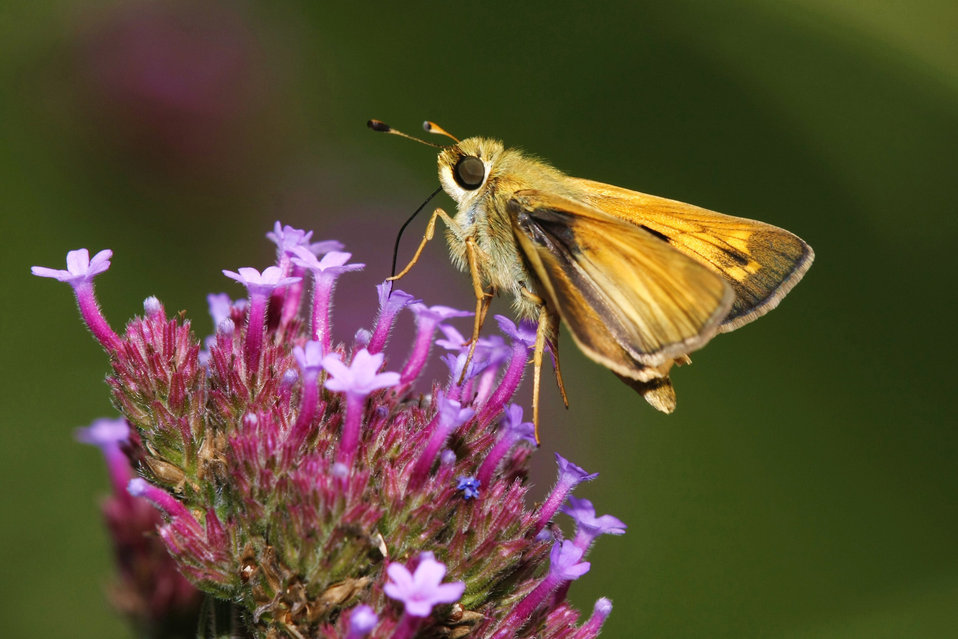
Skipper on garden phlox at John Heinz National Wildlife Refuge in Philadelphia, Pennsylvania.